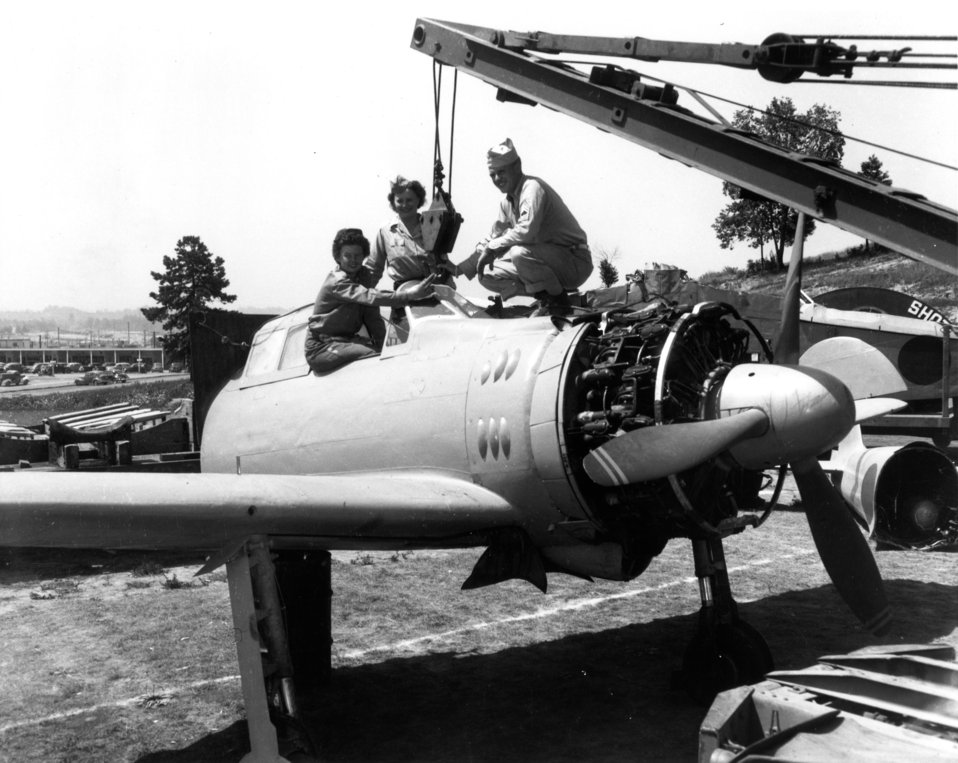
Army Activity at Oak Ridge